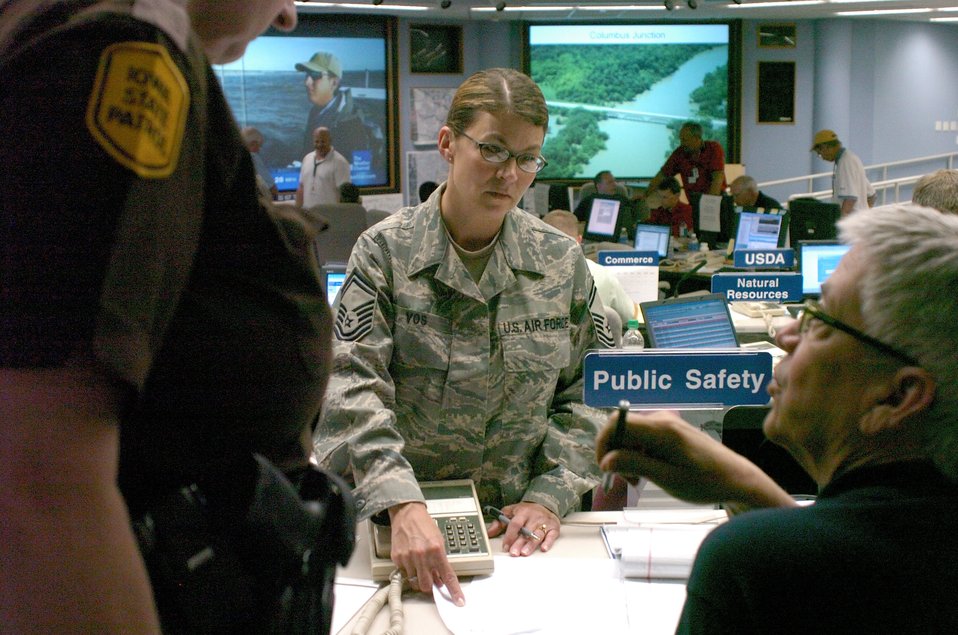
Air, Army National Guard battle floods in Iowa

Senior Master Sgt. Angie Vos talks to Public Safety coordinator John Haas and Iowa State Patrol Capt. Donna Bacus about identifying priority emergency needs and escort movement during the Iowa Floods June 14 at the Iowa National Guard Headquarters in Camp Dodge, Iowa. More than 2,500 National Guard Soldiers and Airmen are currently activated for flood-response operations in Iowa. Sergeant Vos is a National Guard liaison between State Emergency Operations Center and Iowa National Guard.